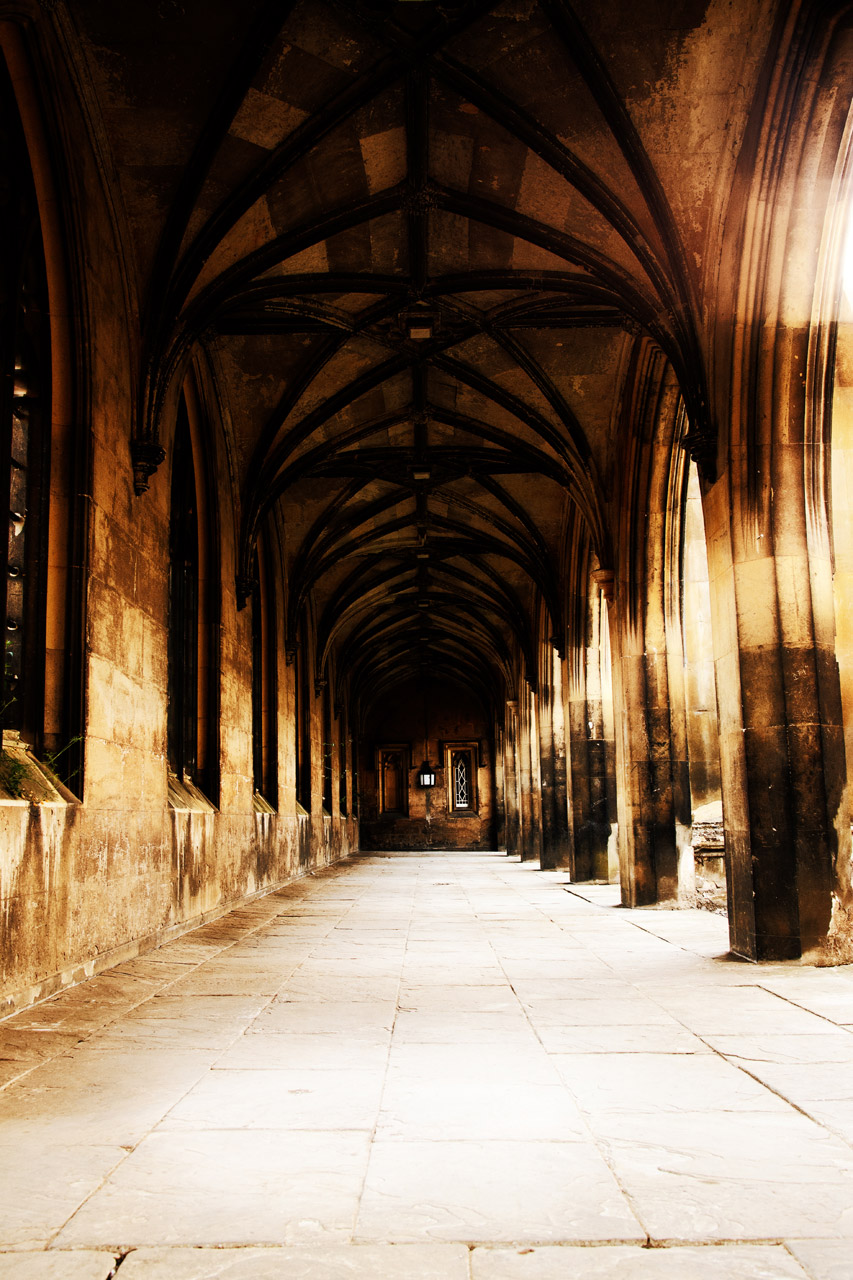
Old archway

An old archway in one the colleges in cambridge.